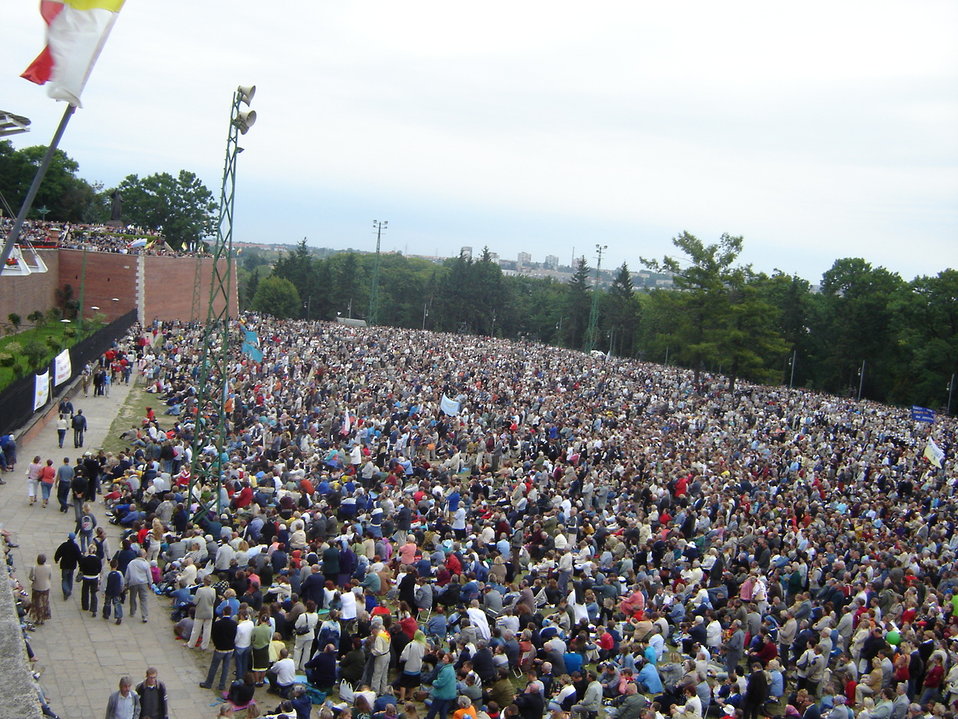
Polski: Uczestnicy uroczystości święta Wniebowzięcia Najświętszej Maryi Panny na Jasnej Górze.